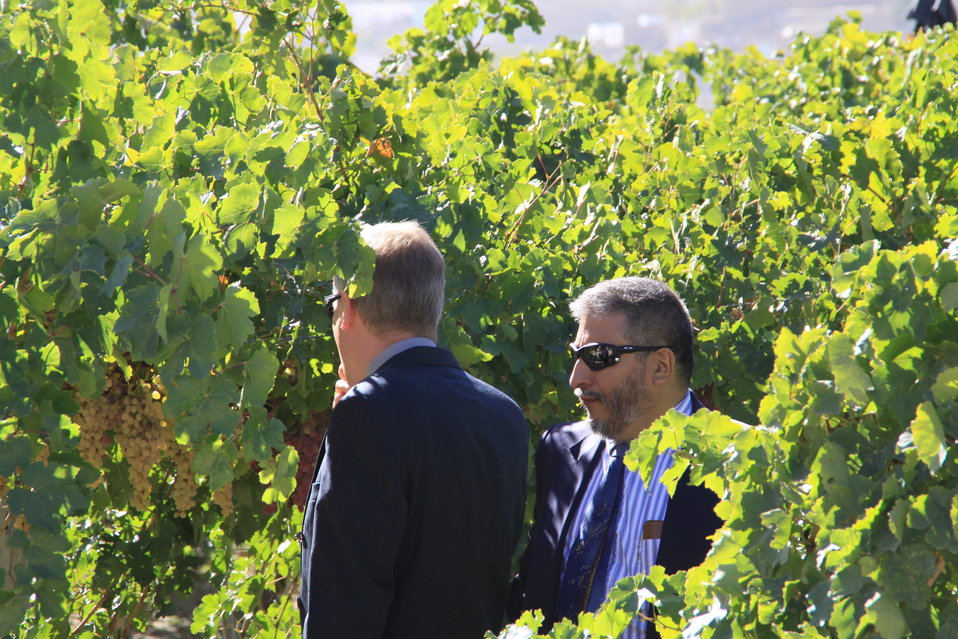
AVIPA Plus Wheat Seed Distribution 101005

US Ambassador Karl Eikenberry and USAID Acting Mission Director Kevin Brownawell joined the Minister of Agriculture, Irrigation and Livestock, H.E. Minister Mohammed Rahimi in signing a Memorandum of Understanding and distributing vouchers to area farmers for wheat and fertilizer.